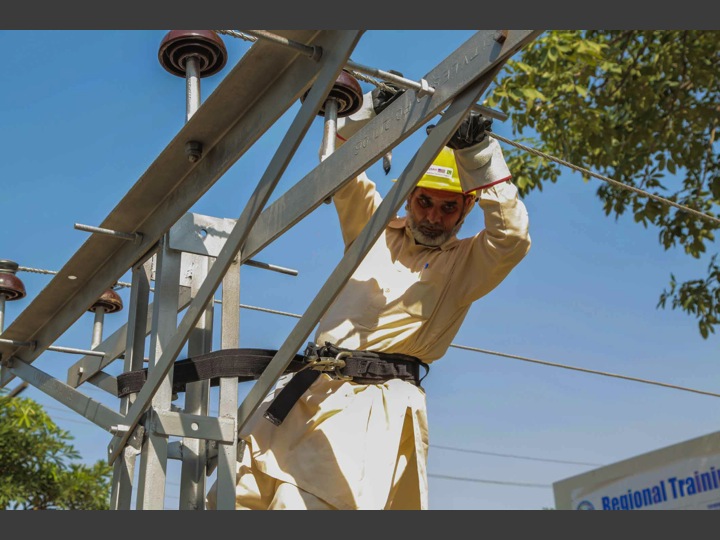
Linemen demonstrating the skills and techniques learnt from training1